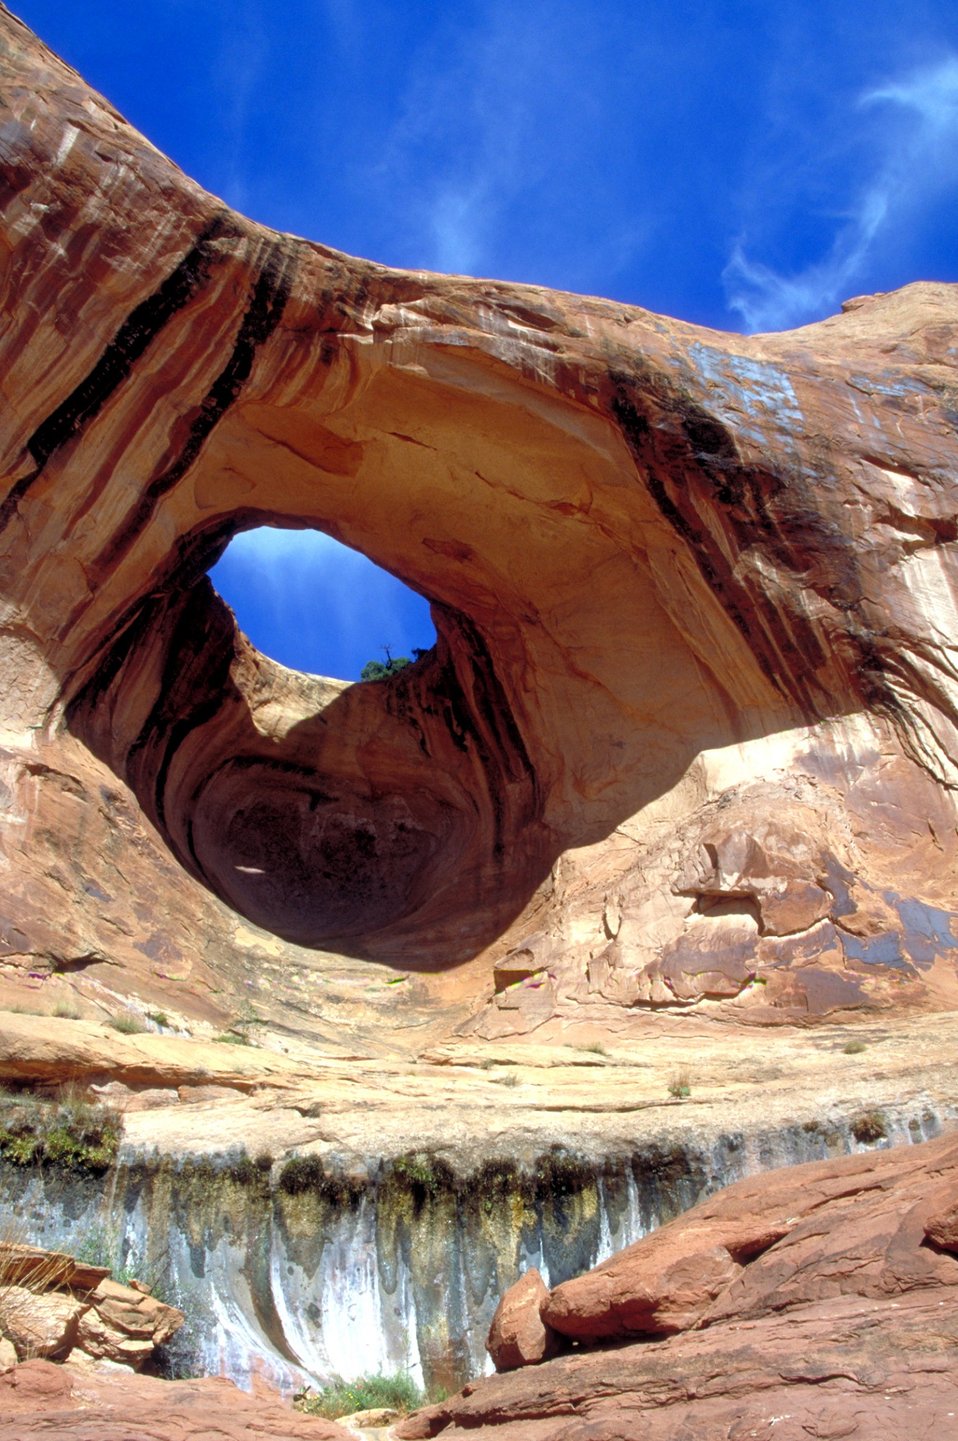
Bowtie Arch near Moab, Utah.